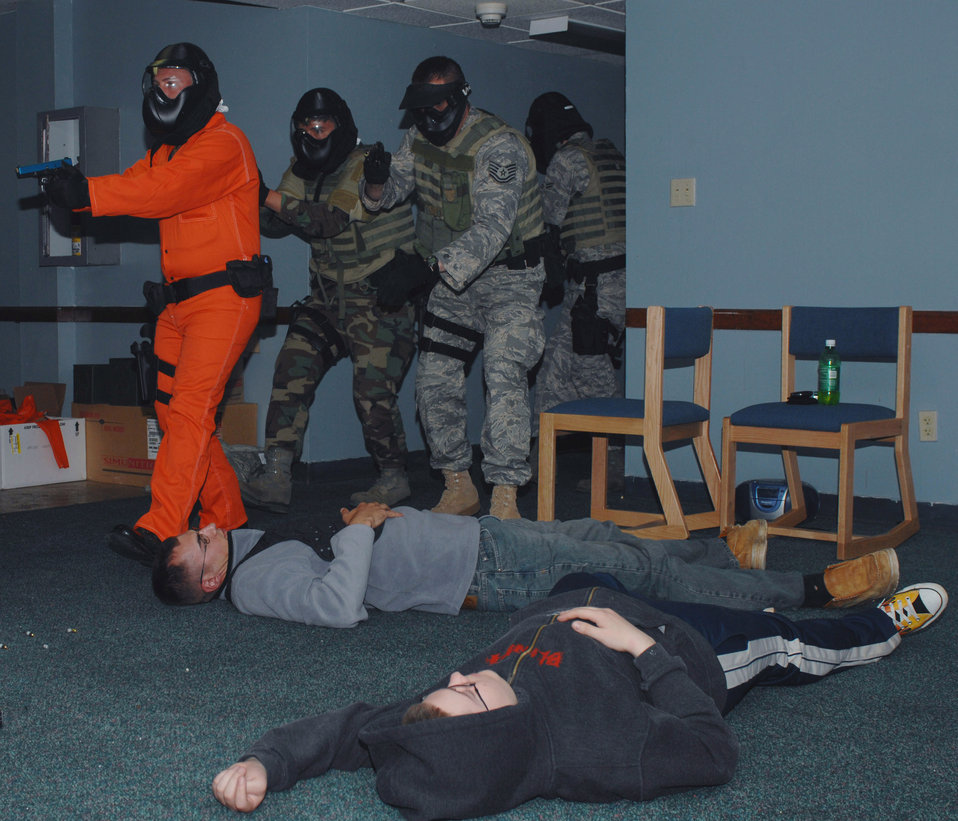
Joint Security Forces Training